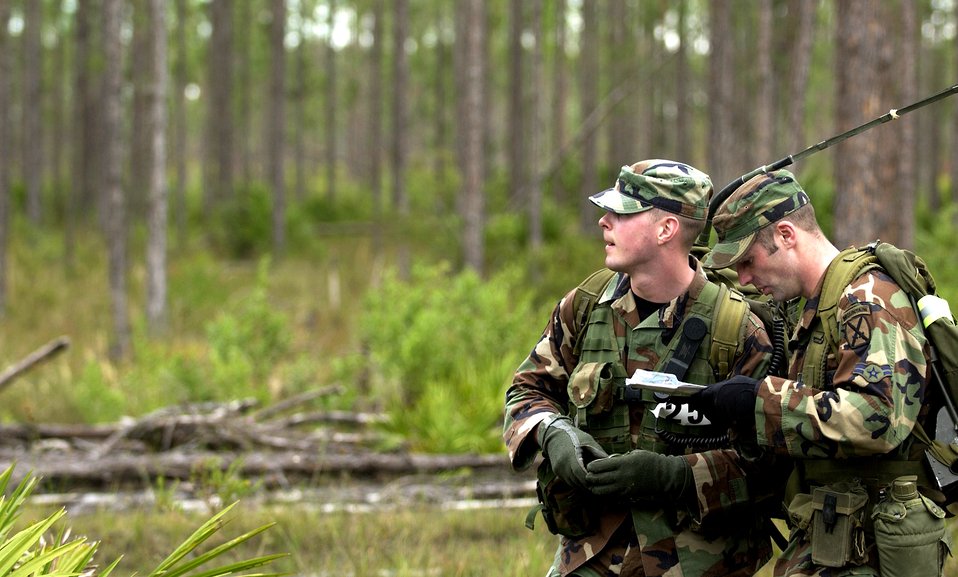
'X' marks the spot

AVON PARK, Fla. -- Senior Airman Justin Pilant and Airman 1st Class Daniel Donche confirm their map's coordinates during a land navigation competition at Dragon Challenge 04 here recently. Dragon Challenge is an annual competition where tactical air control party airmen compete for top honor in physical strength, endurance, mental and emotional challenges.Both Airmen are assigned to the 20th Air Support Operations Squadron , Fort Drum, N.Y.